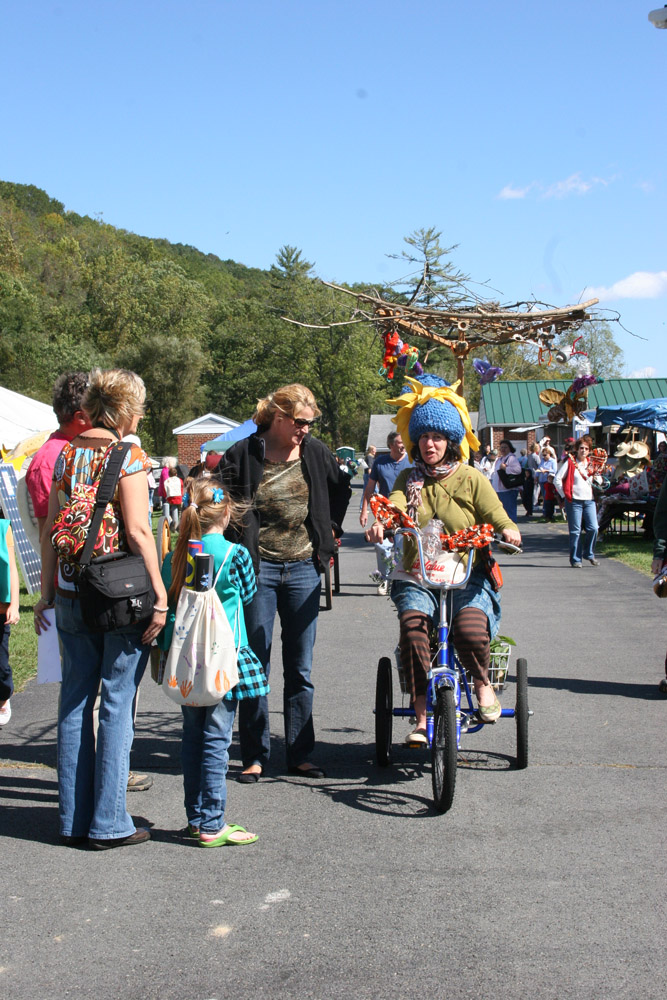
Freshwater Folk Festival

The 5th Annual Freshwater Folk Festival at White Sulphur Springs National Fish Hatchery in West Virginia.Credit: USFWS